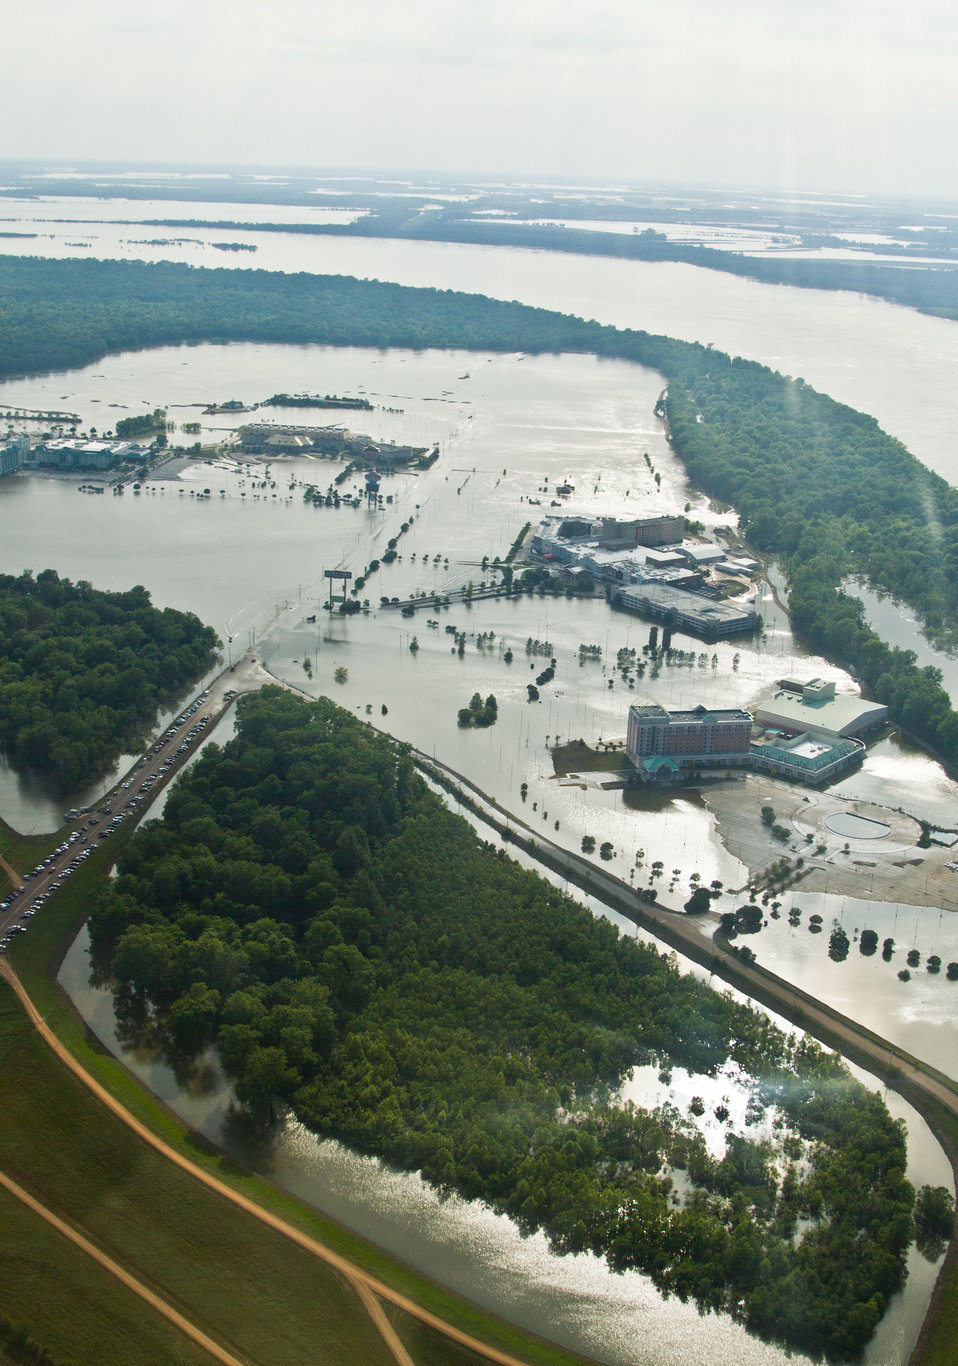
Aerial view of some of the casinos in Tunica, MS. Surrounded by flood waters from the Mississippi River, on Thursday, May 19, 2011. Aerial platform was a UH-60 Blackhawk commanded by Col. Kennedy and his flight crew from the Army Aviation Support Facility #1 at Hawkins Field in Jackson.